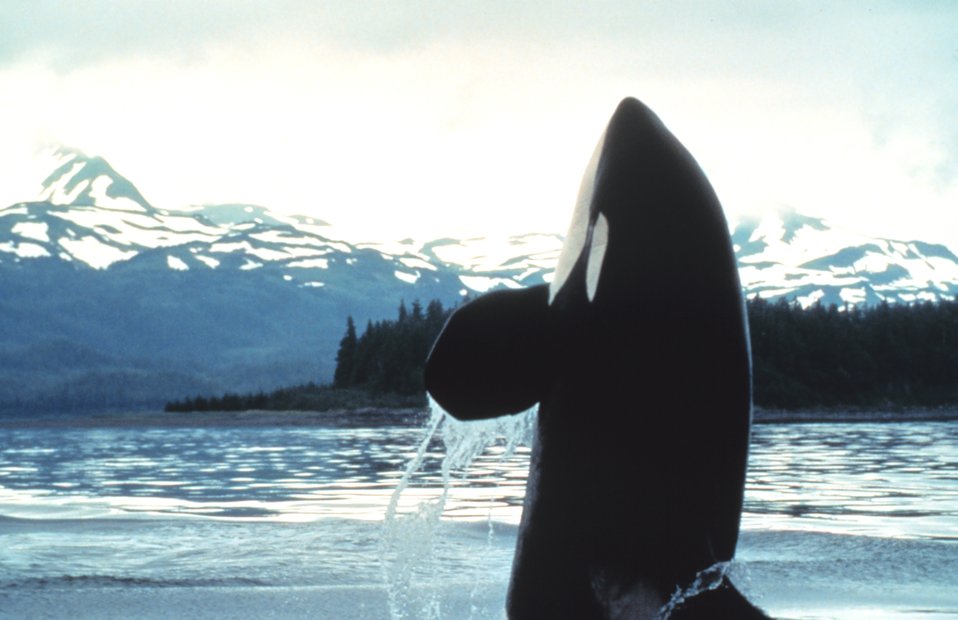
Killer whale spy hopping